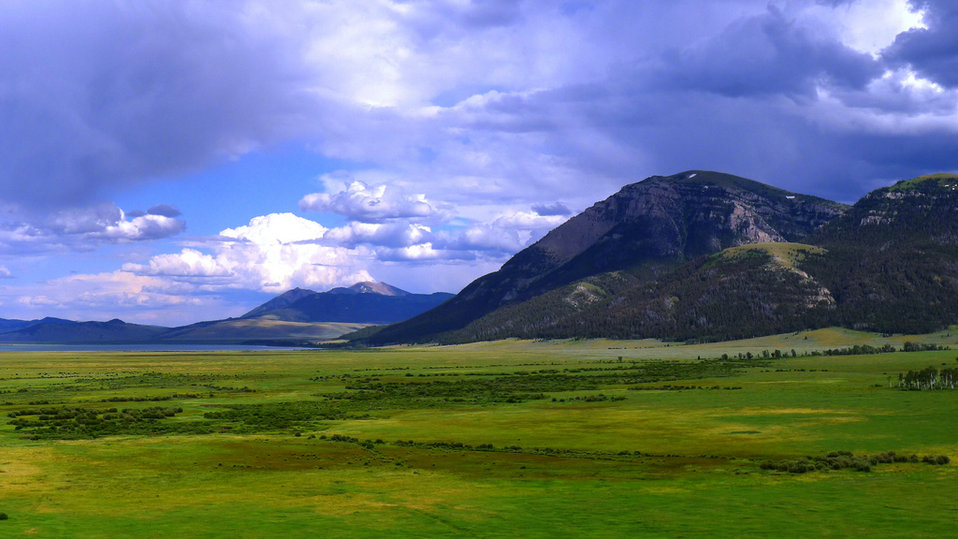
Upper Red Rock Lake and Centennial Mountains

Red Rock Lakes National Wildlife Refuge, MT